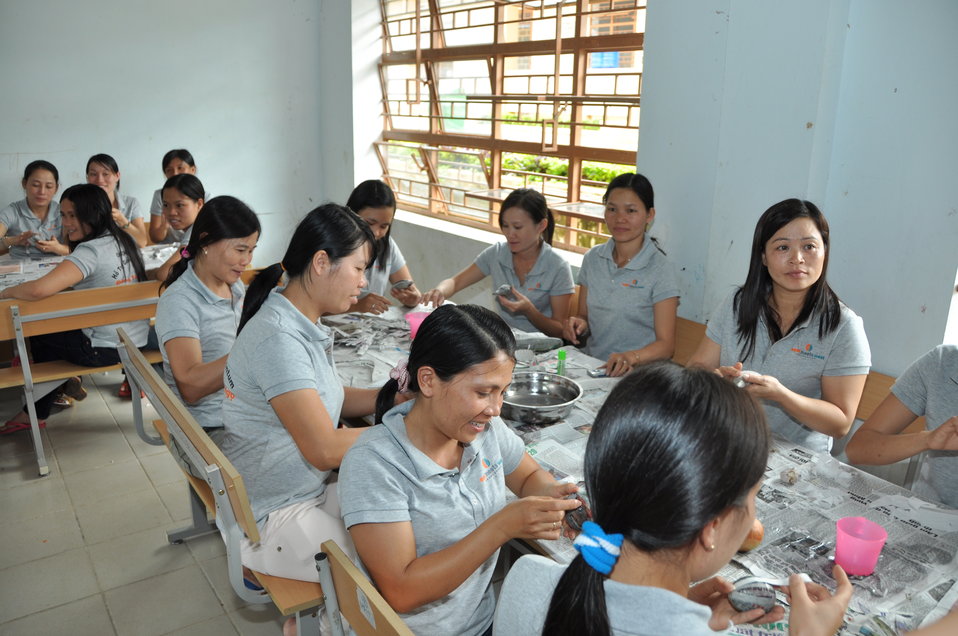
USAID and EMW support teacher training for young ethnic minority children in Kon Tum, Vietnam